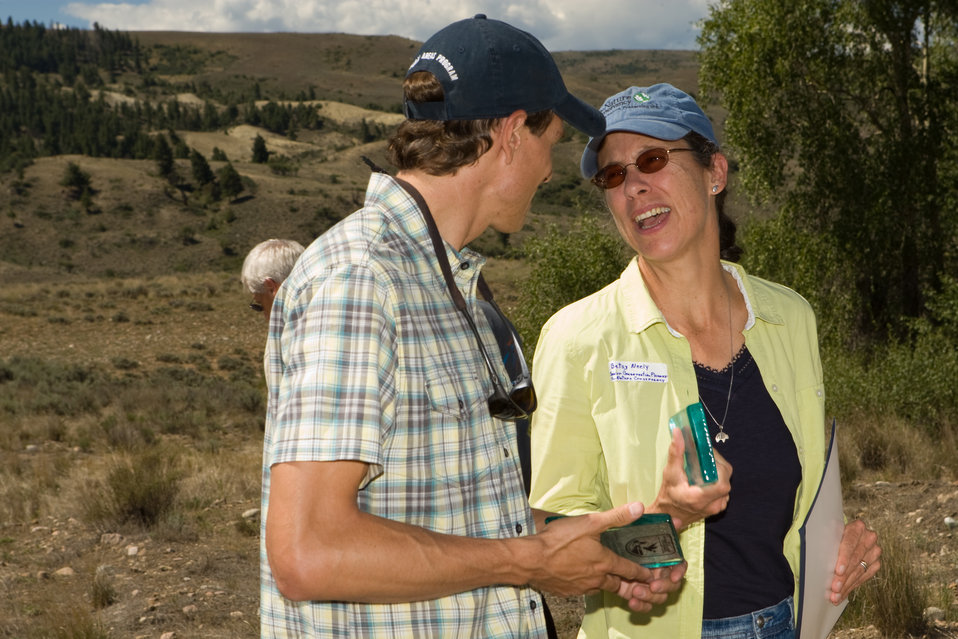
Colorado Rare Plant Conservation Initiative

The Colorado Rare Plant Conservation Initiative (RPCI) is a partnership of 23 statewide and regional agencies, private organizations, and academic institutions working to conserve 121 rare plants in Colorado. As part of these efforts the group developed the Colorado Rare Plant Conservation Strategy, developed Best Management Practices to reduce energy development impacts, addressed climate change, and developed focused strategies for the conservation of individual species at eight priority landscapes. The group has also worked to coordinate volunteer efforts for plant conservation across the state.